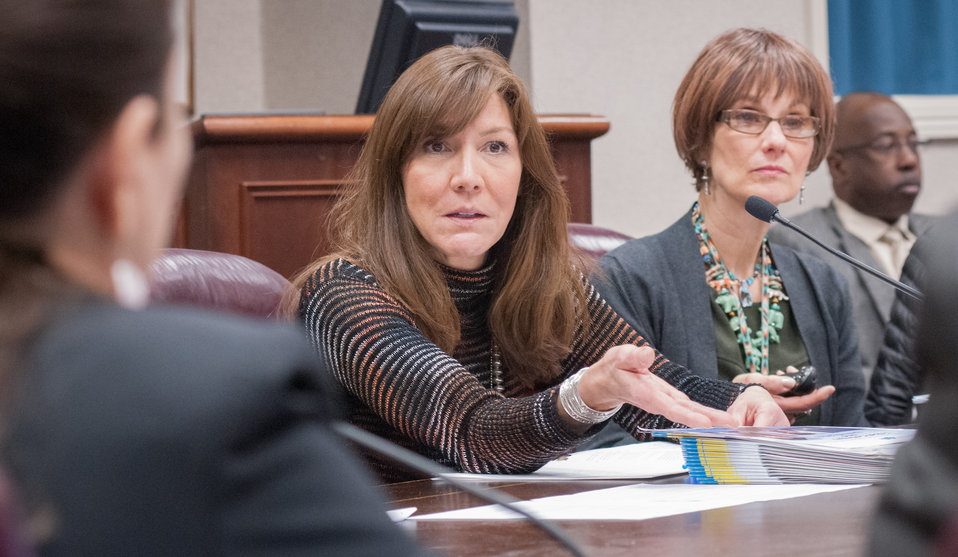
American Indian Higher Education Consortium President/CEO Carrie Billy, at the USDA and American Indian Higher Education Consortium Leadership Group Winter Meeting, at the USDA Whitten Building, Williamsburg Room, in Washington D.C., on Friday, Feb. 8, 2013.